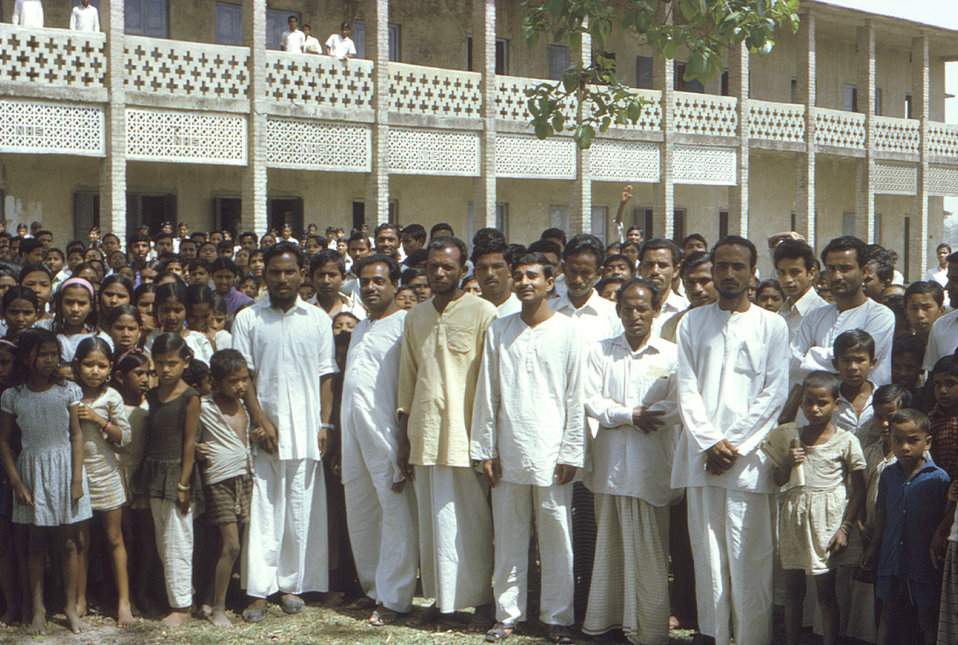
This photograph depicting a large group of Bengali townsfolk, is believed to have been taken sometime in the early 1970s, somewhere in Bangladesh during the worldwide smallpox eradication efforts.The Disease